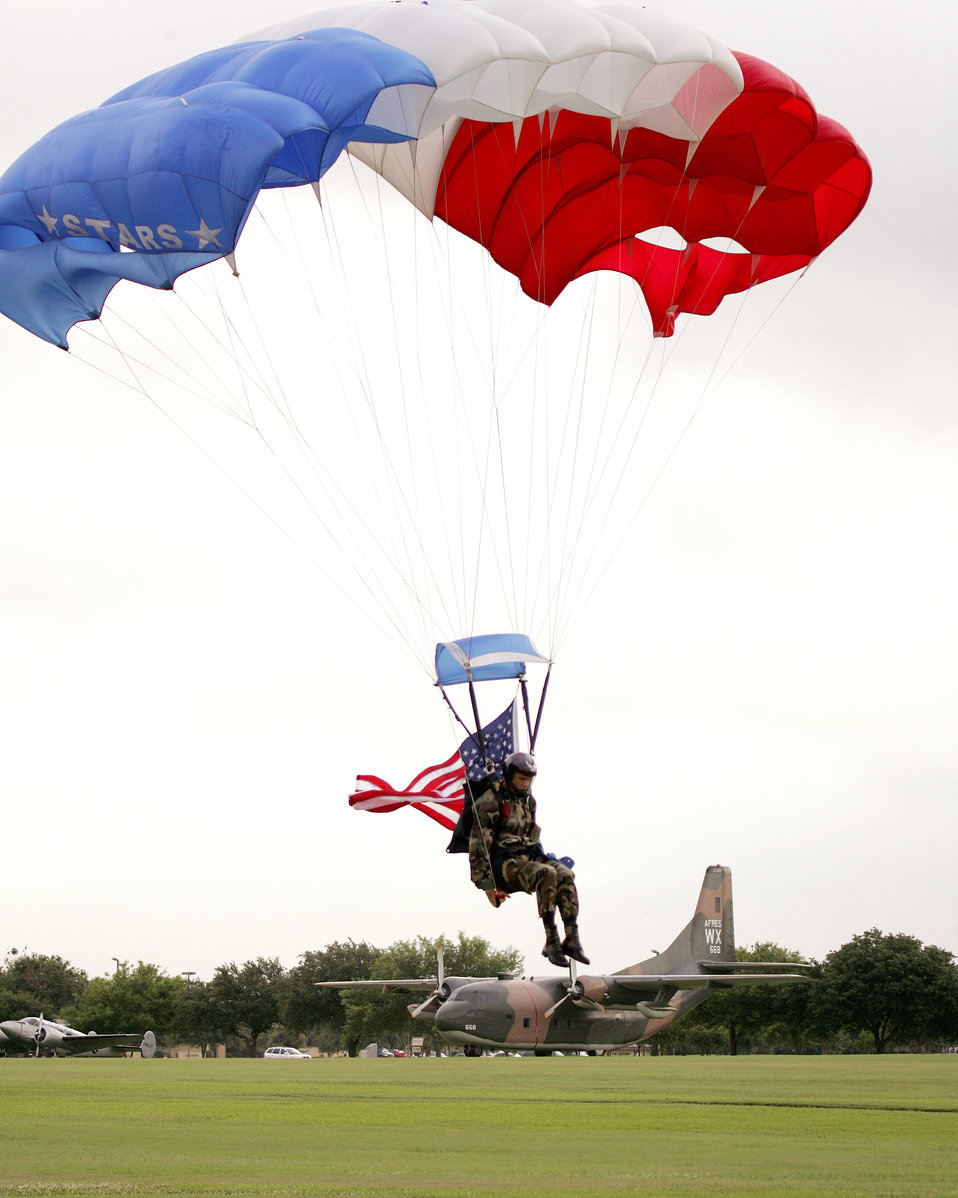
Agent Kuglics memorial

Airmen from the 342nd Training Squadron's pararescue and combat control instructor staff jump into the memorial ceremony June 18 as a tribute to Special Agent Matthew Kuglics' close working relationship with the Air Force Special Operations community. Agent Kuglics was killed in action by an improvised explosive while supporting Operation Iraqi Freedom.